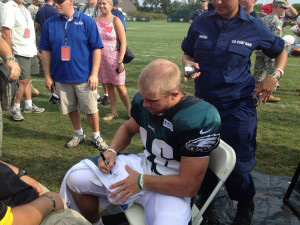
Wounded Warrior

Academy grad and Eagles wide receiver Chad Hall signs an autograph while getting his head shaved for the Wounded Warrior Project at training camp on Wednesday.